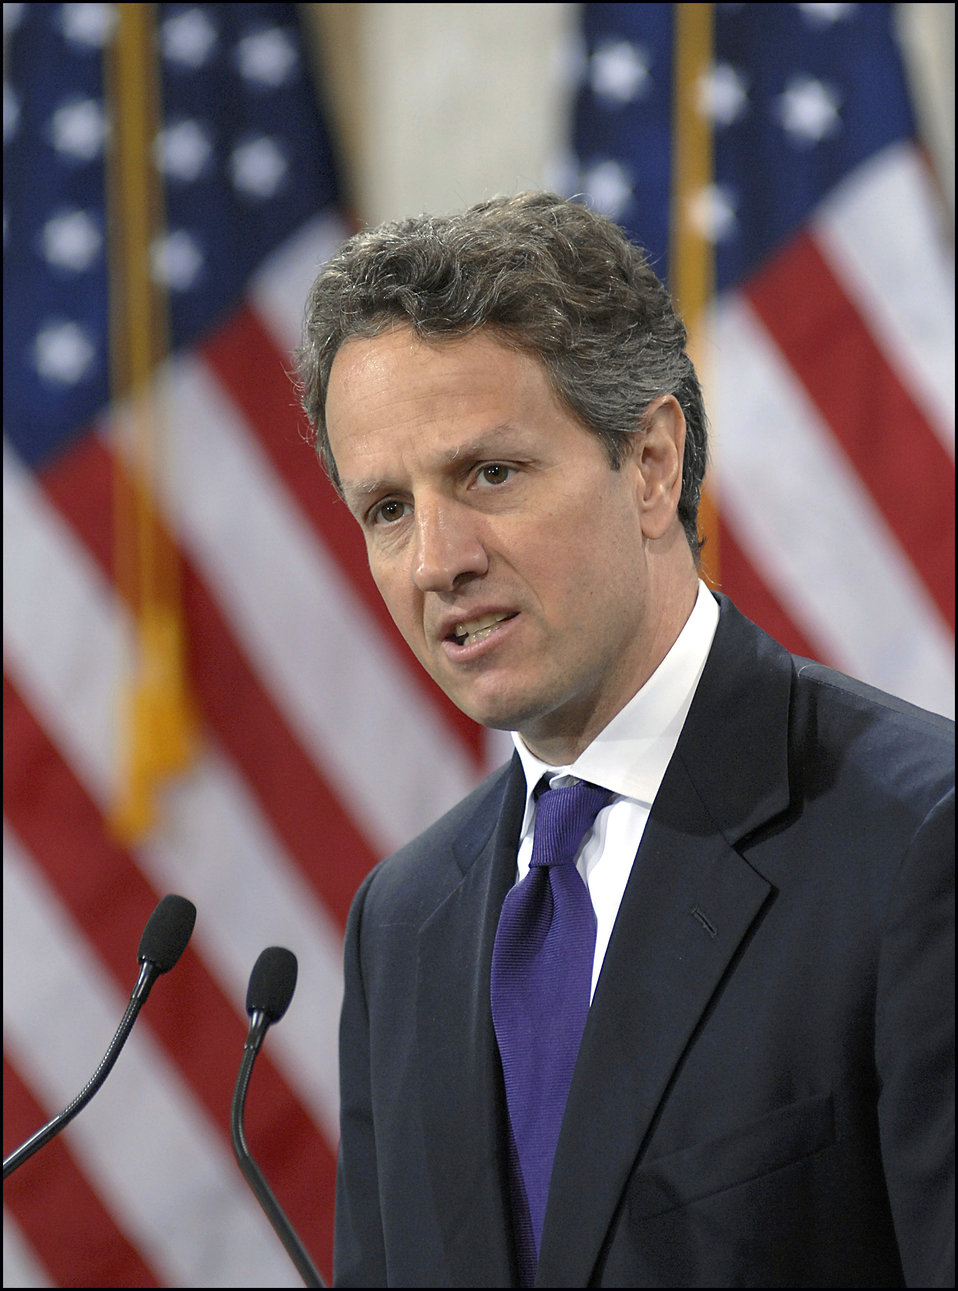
Women in Finance Symposium, 03/29/2010

Secretary Geithner speaks at the Women in Finance Symposium, March 29, 2010.